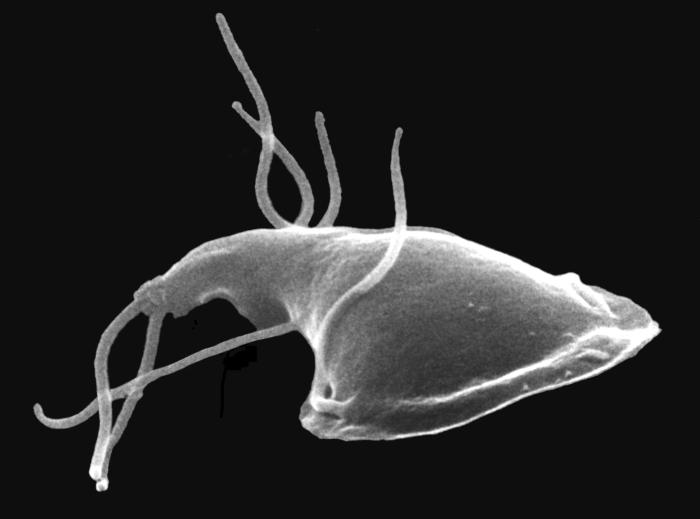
This scanning electron micrograph (SEM) depicted the dorsal (upper) surface of a Giardia protozoan that had been isolated from a rat's intestine. Some of the identifying morphologic characteristics include pairs of thread-like flagella that facilitate motility, and a ventolateral flange that appears as a 'ruffle' around the anterior portion of the organism. Pairs of flagella seen here include an anterior, posterior-lateral, and caudal pairs.